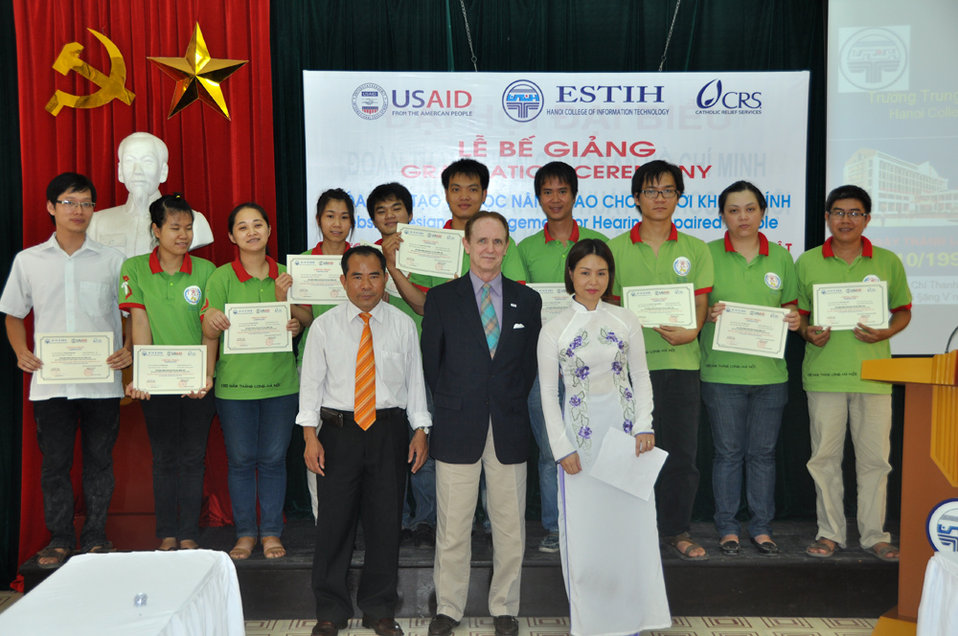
USAID Mission Director Francis Donovan participate in graduation of IT students in Hanoi on June 22, 2011.